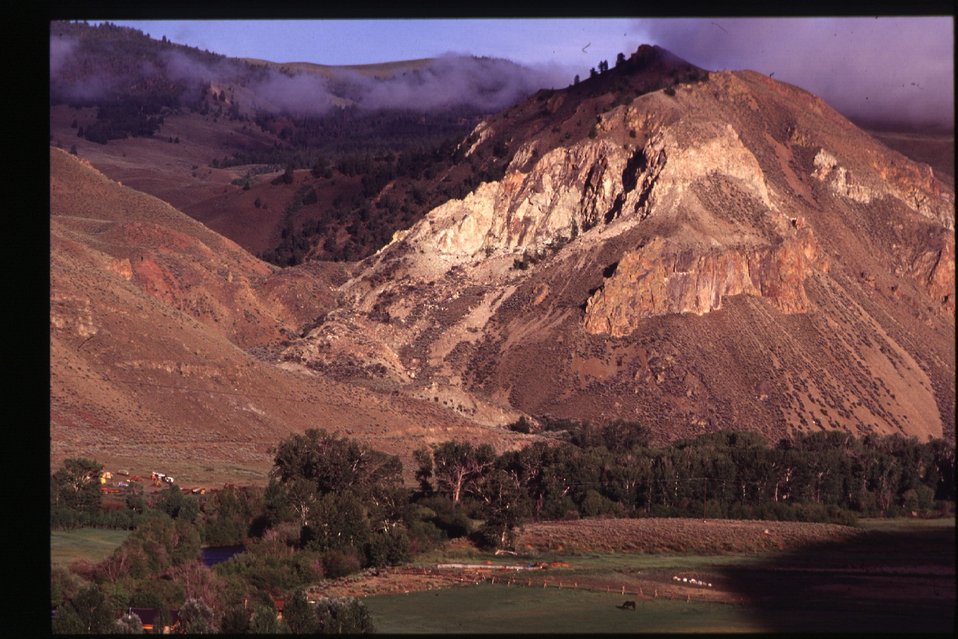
Scenics Salmon Field Office UCSC Upper Columbia Salmon Clearwater District